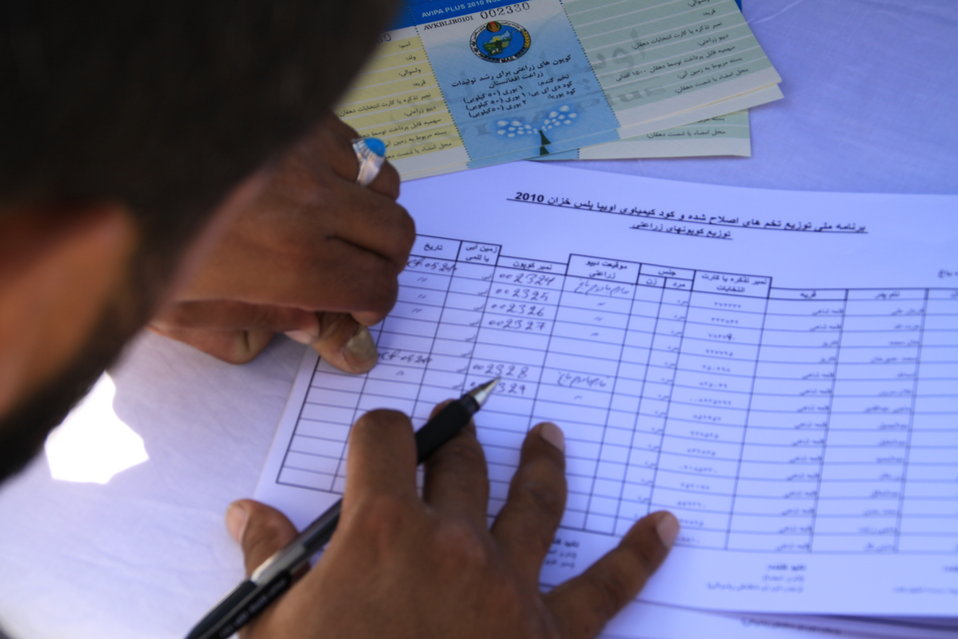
AVIPA Plus Wheat Seed Distribution 101005

US Ambassador Karl Eikenberry and USAID Acting Mission Director Kevin Brownawell joined the Minister of Agriculture, Irrigation and Livestock, H.E. Minister Mohammed Rahimi in signing a Memorandum of Understanding and distributing vouchers to area farmers for wheat and fertilizer.

US Ambassador Karl Eikenberry and USAID Acting Mission Director Kevin Brownawell joined the Minister of Agriculture, Irrigation and Livestock, H.E. Minister Mohammed Rahimi in signing a Memorandum of Understanding and distributing vouchers to area farmers for wheat and fertilizer.

US Ambassador Karl Eikenberry and USAID Acting Mission Director Kevin Brownawell joined the Minister of Agriculture, Irrigation and Livestock, H.E. Minister Mohammed Rahimi in signing a Memorandum of Understanding and distributing vouchers to area farmers for wheat and fertilizer.